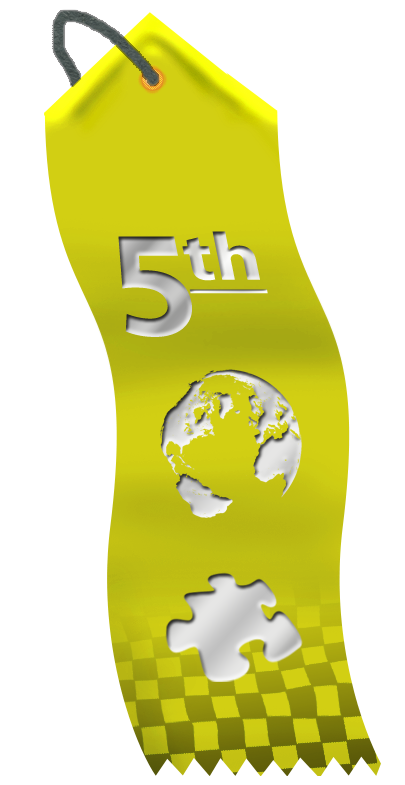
5nd place ribbon for a race